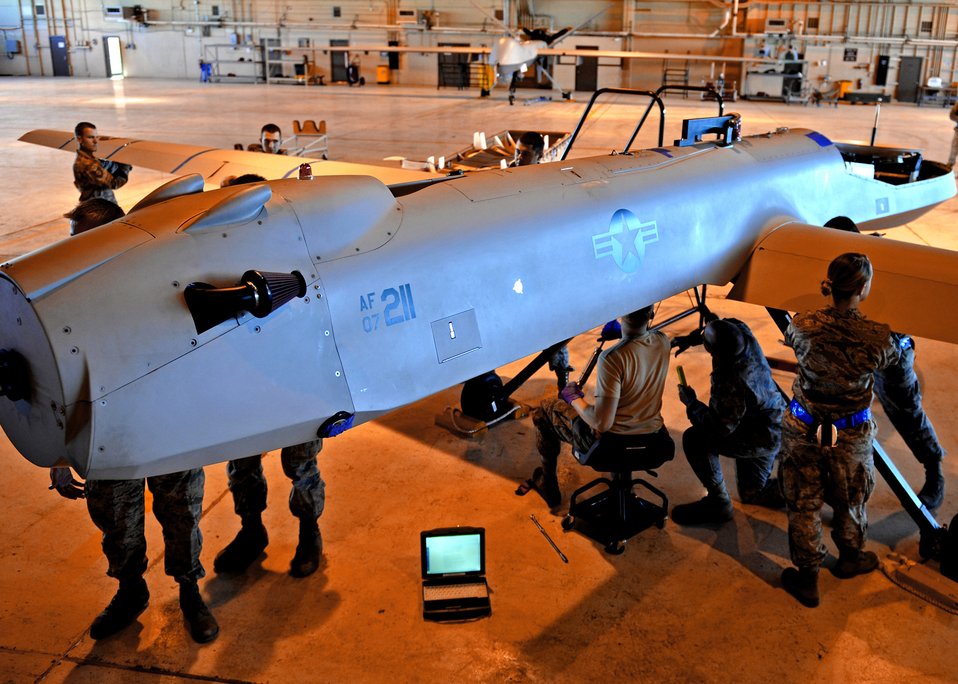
849th AMXS provides eyes in the sky of Haiti

Airmen from the 849th Aircraft Maintenance Squadron disassemble an MQ-1 Predator in preparation for departure in support of Operation Unified Response Jan. 17, 2010, at Holloman Air Force Base, N.M.